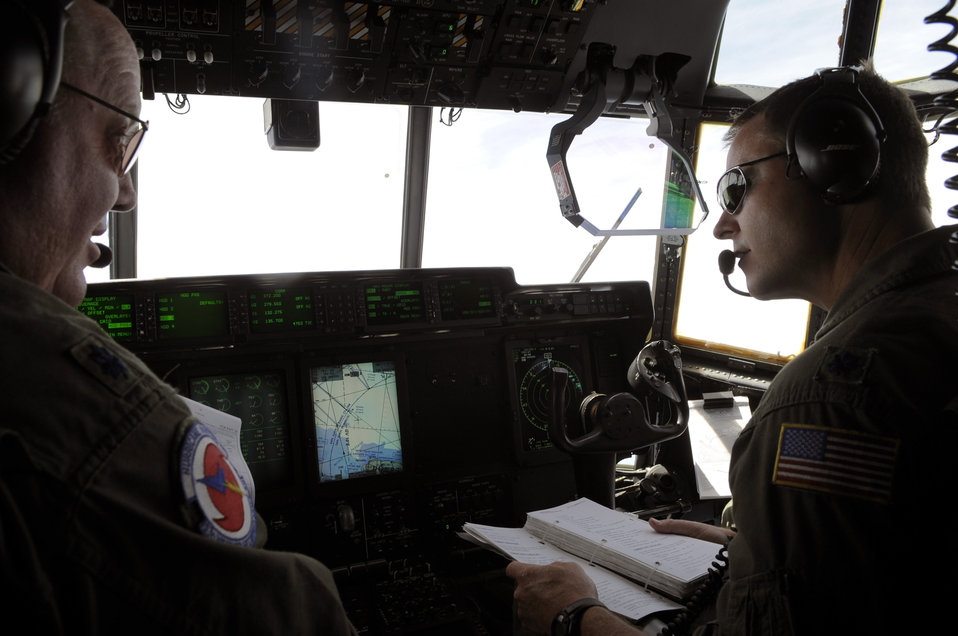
Airmen prep for upcoming hurricane season

Lt. Col. Roger Gardner and Lt. Col. Louis Patriquin review a checklist during a training mission on a WC-130J Hercules to St. Croix, V.I. from Keesler Air Force Base, Miss. Colonel Gardner is the aircraft commander and Colonel Patriquin is the 403rd Operations Group commander. The mission covered the Air Force Reserve Command's weather mission as they enter Hurricane Season, which began June 1.